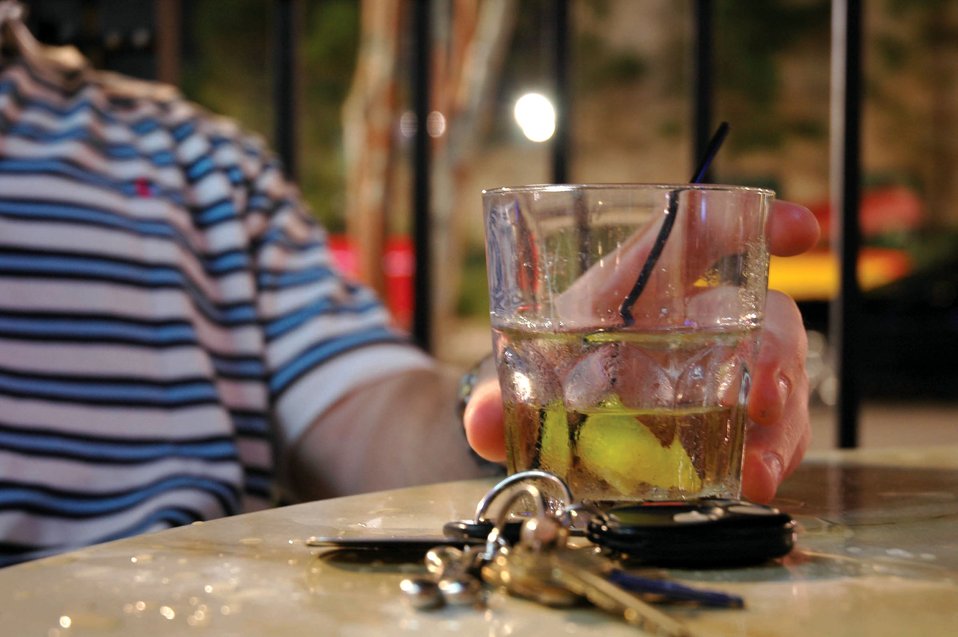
Sobering facts about DUI

EGLIN AIR FORCE BASE, Fla. -- Florida statute defines driving under the influence as a person driving or in actual physical control of a vehicle who is under the influence of alcohol or other controlled substances with a blood-alcohol level of 0.08 or higher.